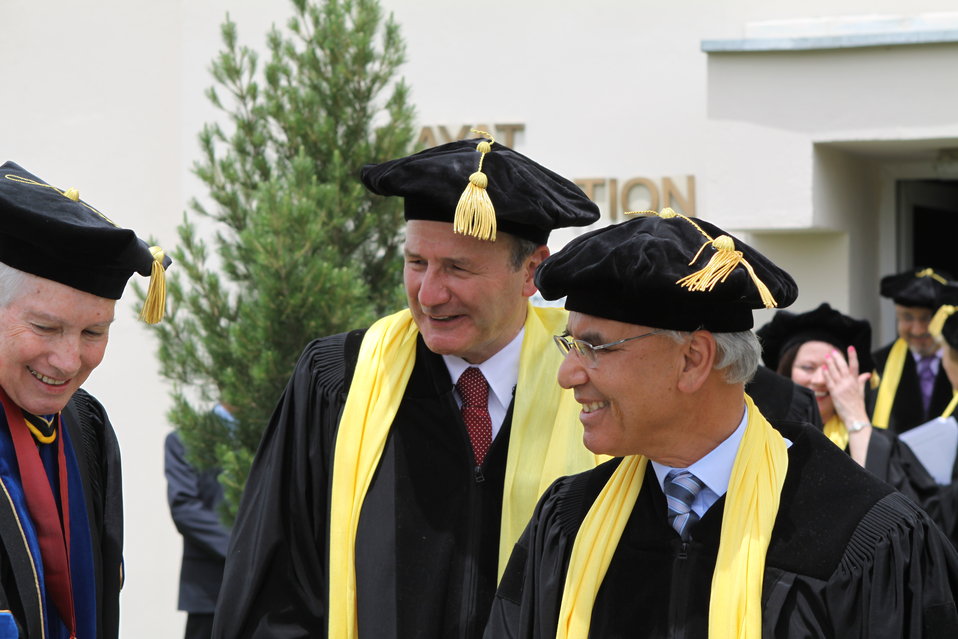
100526 AUAF Graduation 323